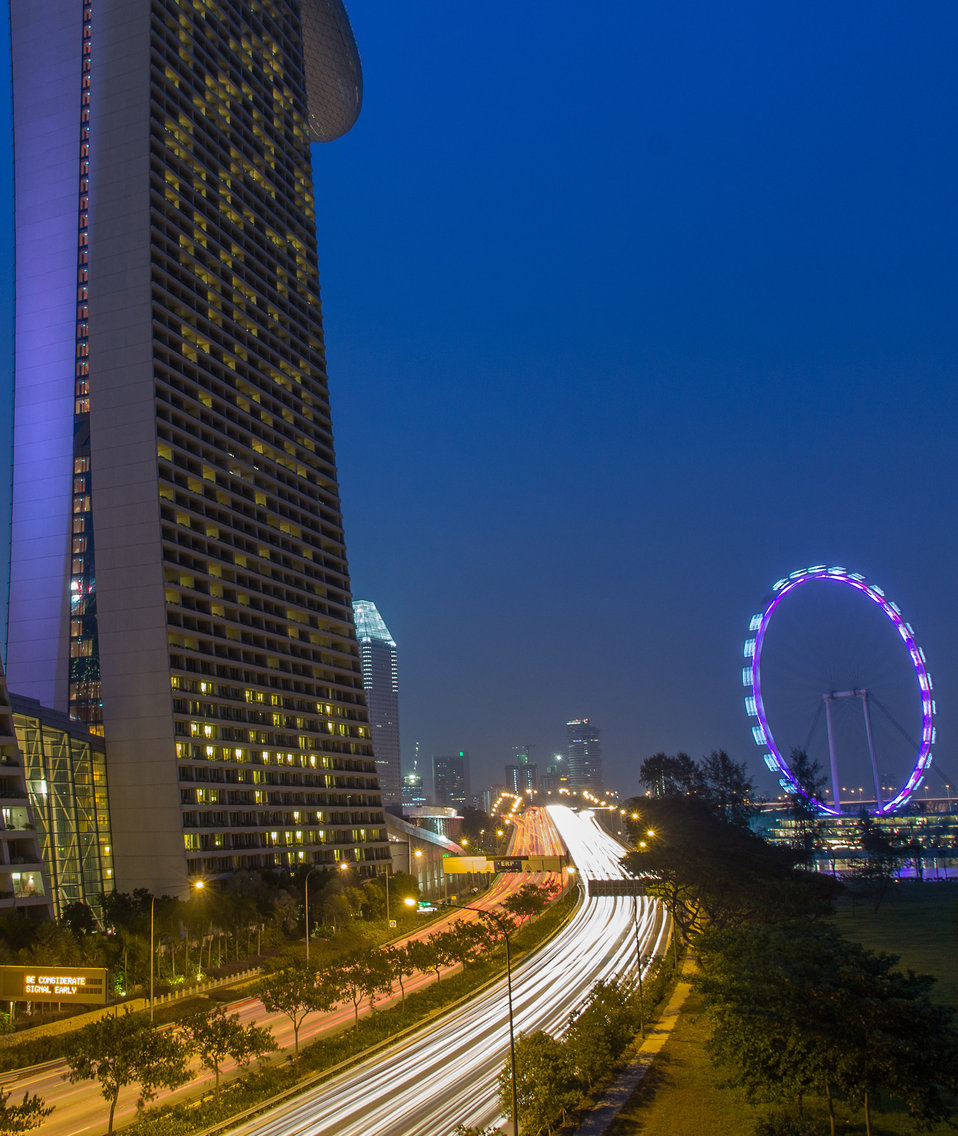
Marina bay sands singapore flyer

Mbs & sg flyer blue hour shot.